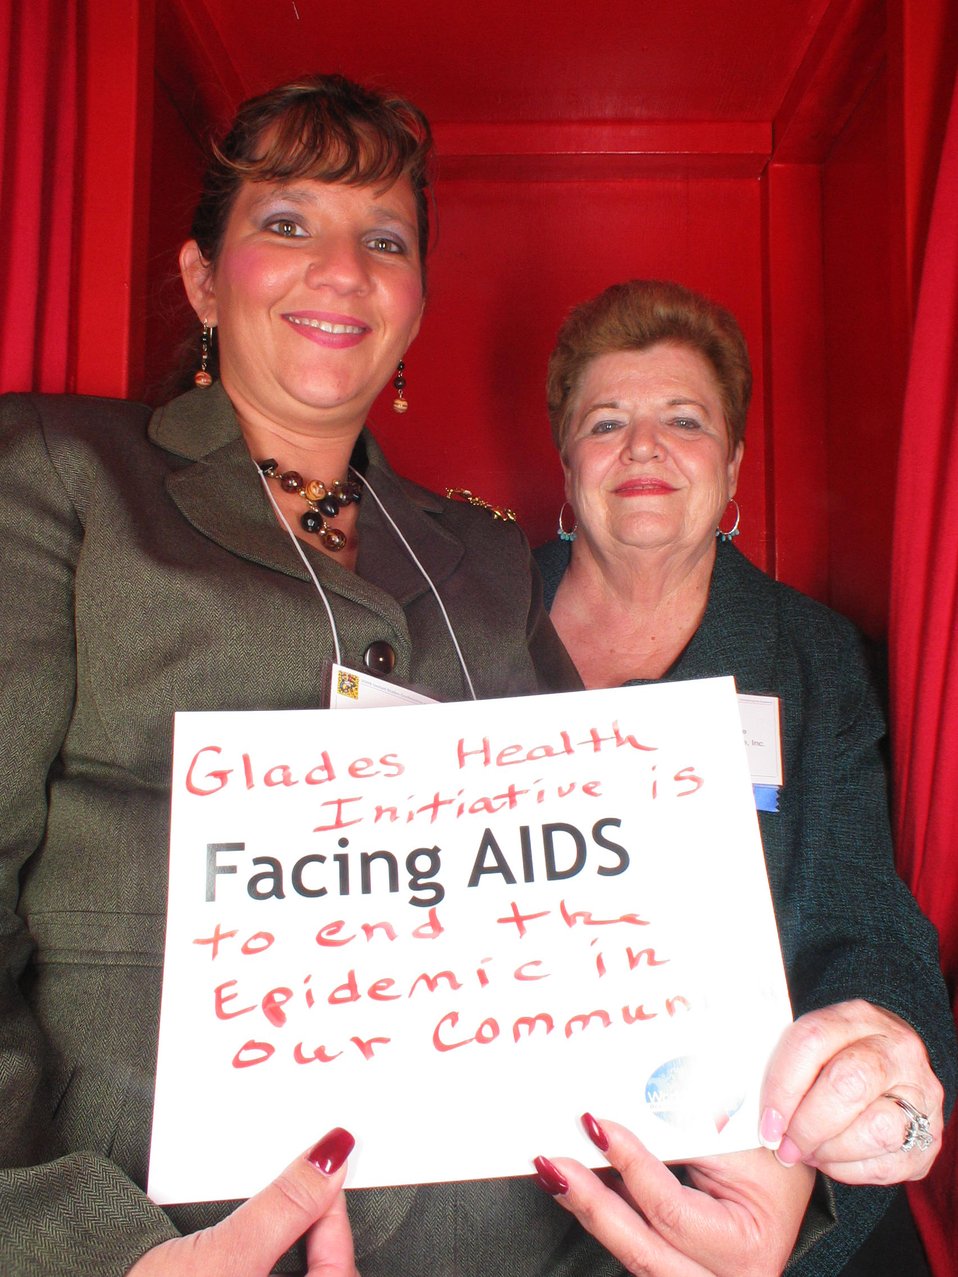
Facing AIDS to end the epidemic in our community.